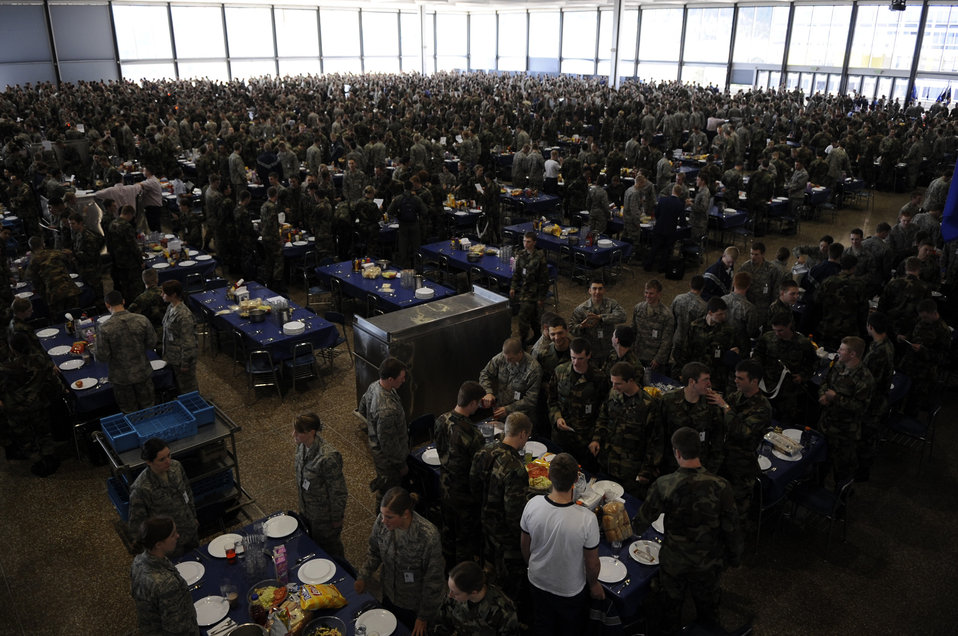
U.S.Air Force Academy Mitchell Hall Cadet Dining Facility

Cadets stand beside their chairs Jan. 23 as they wait for the rest of the cadets to enter Mitchell Hall Cadet Dining Facility at the U.S. Air Force Academy in Colorado Springs, Colo. so they can begin lunch. The dining facility feeds approximately 4450 cadets and sits on 1.75 acres.